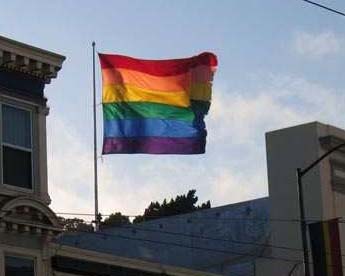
Six color rainbow gay pride flag flying above Castro Street, San Francisco, California, June 2005.